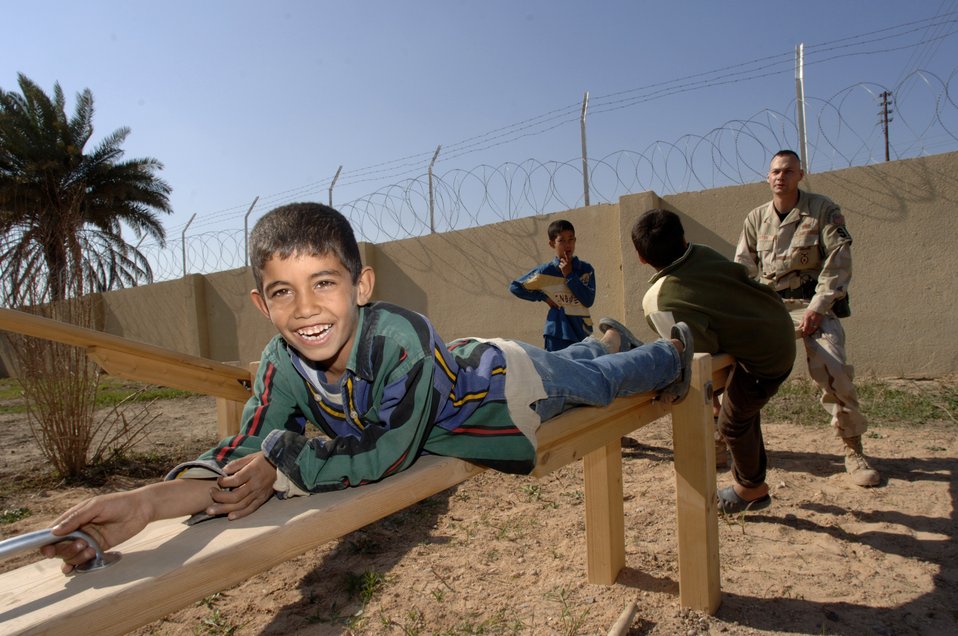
Medics, volunteers meet Iraqis' medical needs

Staff Sgt. Brian Newton plays with Iraqi children at the playground outside the Radhwaniya Medical Clinic. Sergeant Newton is assigned to the 447th Expeditionary Security Forces Squadron, Sather Air Base, Iraq. Several times a week volunteers meet at the facility on the edge of the Baghdad International Airport area and support the medical needs of civilians.